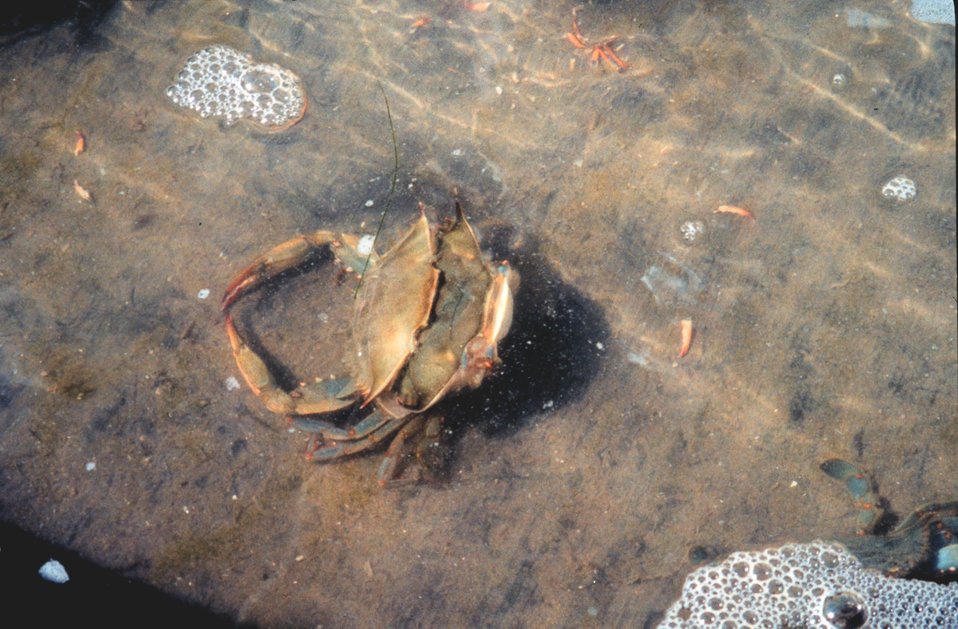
Photo #3 of 8. Having reached the 'buster' molt stage, a Maryland blue crab , Callinectes sapidus, sheds its shell. The genus and species mean tasty beautiful swimmer.